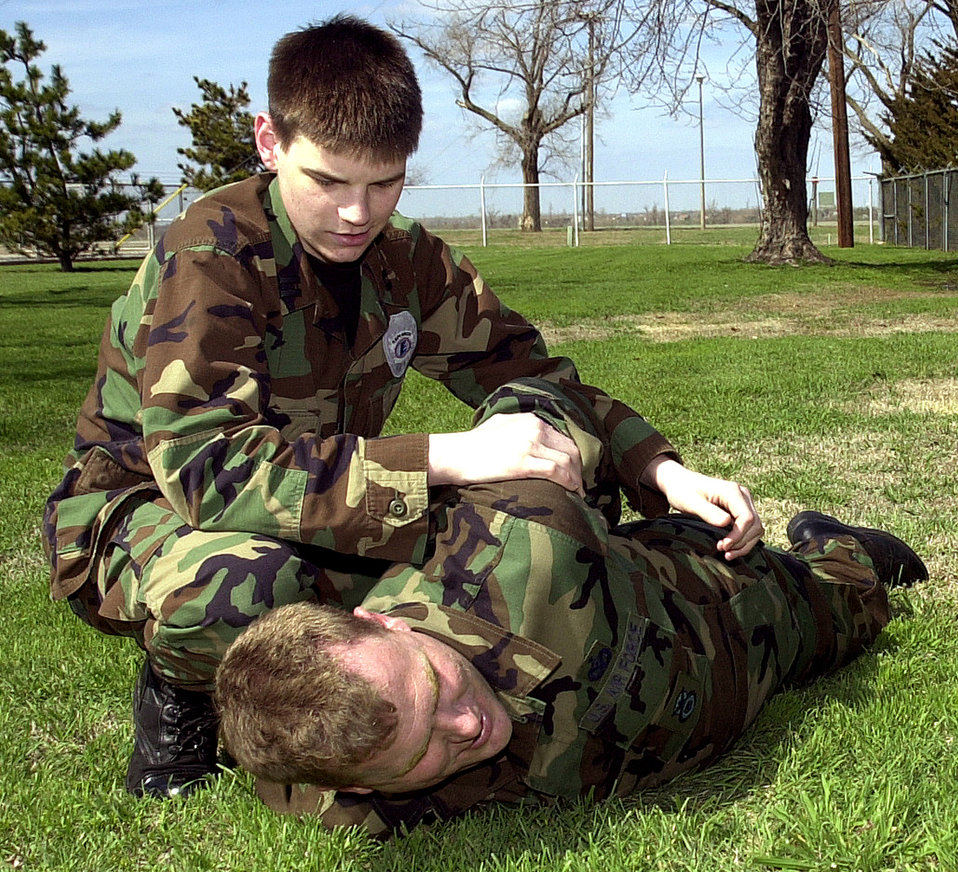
Sheets

VANCE AIR FORCE BASE, Okla. -- Travis Sheets, 17, searches Tech. Sgt. Chuck Daniels of the 71st Security Forces Squadron here. Travis began participating in the base's Ride-Along Program when he was 14. Now, as a member of the Explorer Post, he receives more in-depth law enforcement instruction.